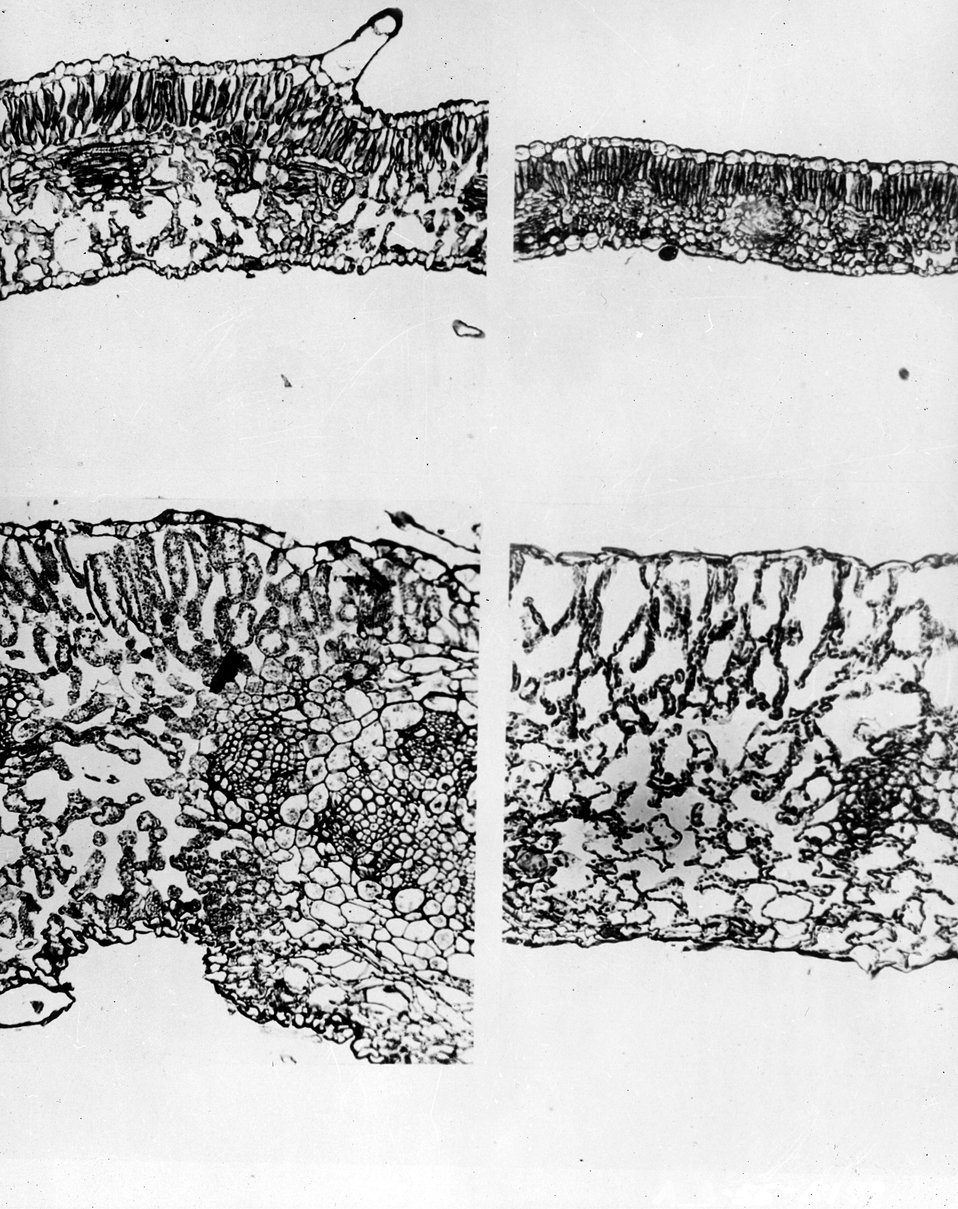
The effect of nuclear radiation on leaves of tobacco plants is shown in cross sections seen under microscope at Brookhaven National Laboratory. c. 1955